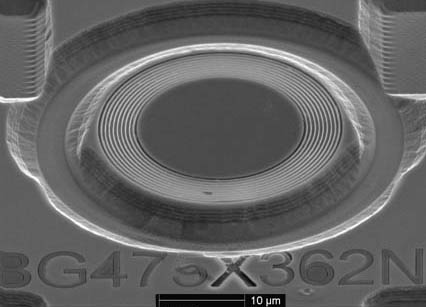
Novel Nano-Etched Cavity Makes LEDs 7 Times Brighter

Etched nanostructured rings around an LED can make it more than seven times brighter. The novel technique developed at NIST may have applications in areas such as in biomedical imaging where LED brightness is crucial.